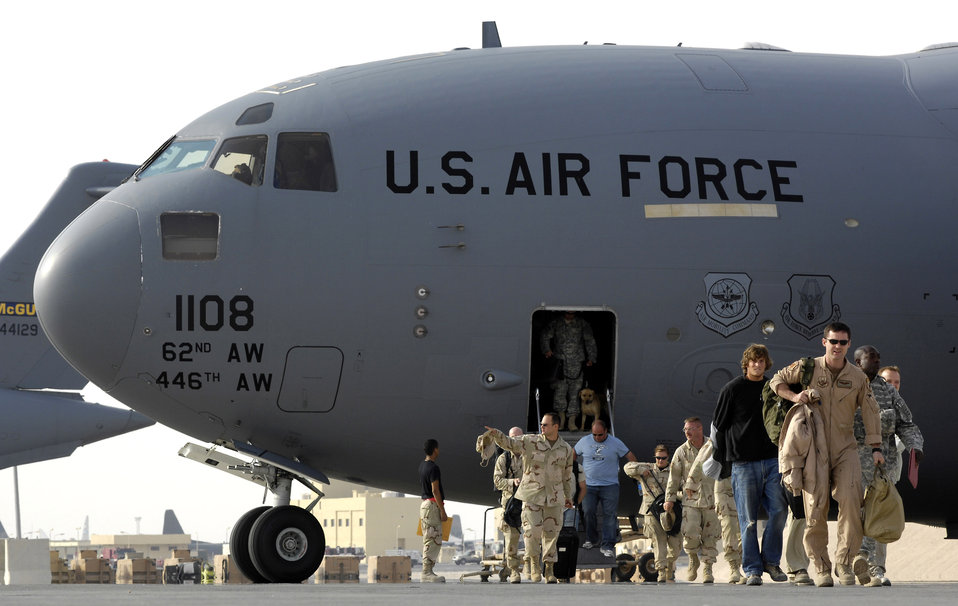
Airpower summary for Oct. 2, 2007

Passengers depart a C-17 Globemaster III in Southwest Asia Oct. 3. September was a record-breaking month for the air component mobility fleet. For the first time, the air mobility fleet transported more than 115,000 passengers and more than 20,000 short tons of cargo in, out and around the U.S. Central Command area of responsibility.